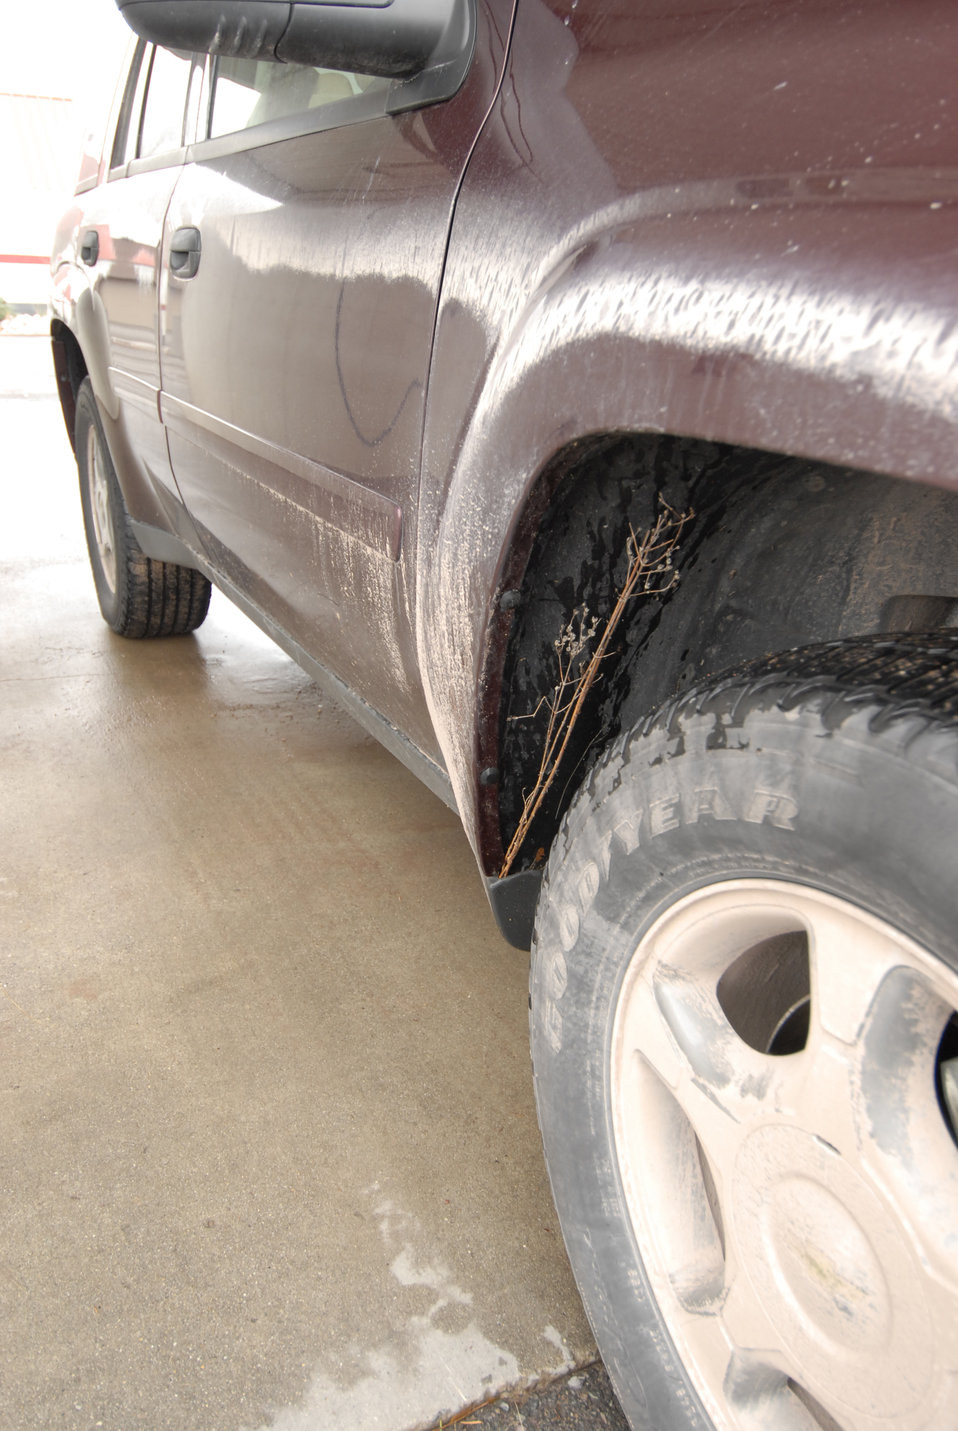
The U.S. Department of Agriculture’s (USDA) Forest Service (FS) invasive species program is to reduce, minimize, or eliminate the potential for introduction, establishment, spread, and impact of invasive species across all landscapes and ownerships. Invasive species have been characterized as a “catastrophic wildfire in slow motion.” Thousands of non-native invasive plants, insects, fish, mollusks, crustaceans, pathogens, mammals, birds, reptiles, and amphibians have infested hundreds of millions of acres of land and water across the Nation, causing massive disruptions in ecosystem function, reducing biodiversity, and degrading ecosystem health in our Nation’s forests, prairies, mountains, wetlands, rivers, and oceans. Invasive organisms affect the health of not only the Nation’s forests and rangelands but also of wildlife, livestock, fish, and humans. A washing station has been set up to allow visitors at the National Bison Range Wildlife Refuge in Montana to clean the underside and wheel-wells of their vehicles to prevent the spread of non-native weeds and grasses on November 17, 2007.